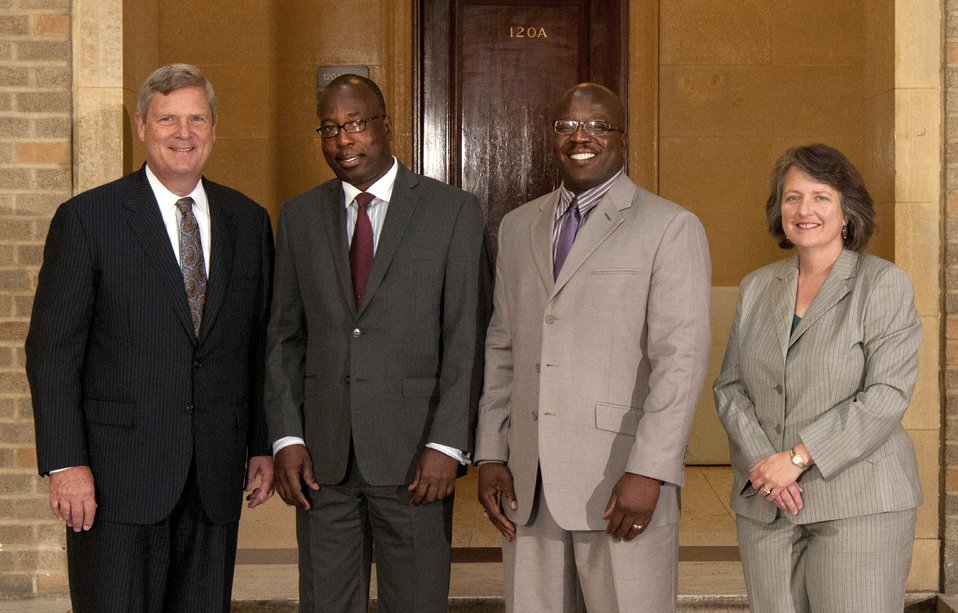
Agriculture Secretary Tom Vilsack and Deputy Agriculture Secretary Kathleen Merrigan with Honor Award Group Distance Learning and Mentorship Program, Economic Research Service (ERS) on the patio of the U.S. Department of Agriculture in Washington, D.C. on Wednesday, Sept. 12, 2012. The Distance Learning and Mentorship Program received their award for sustained excellence and foresight in developing a more diverse community of agricultural economists and policy analysts through the ERS Distance Learning and Mentorship Program for minority-serving institutions.